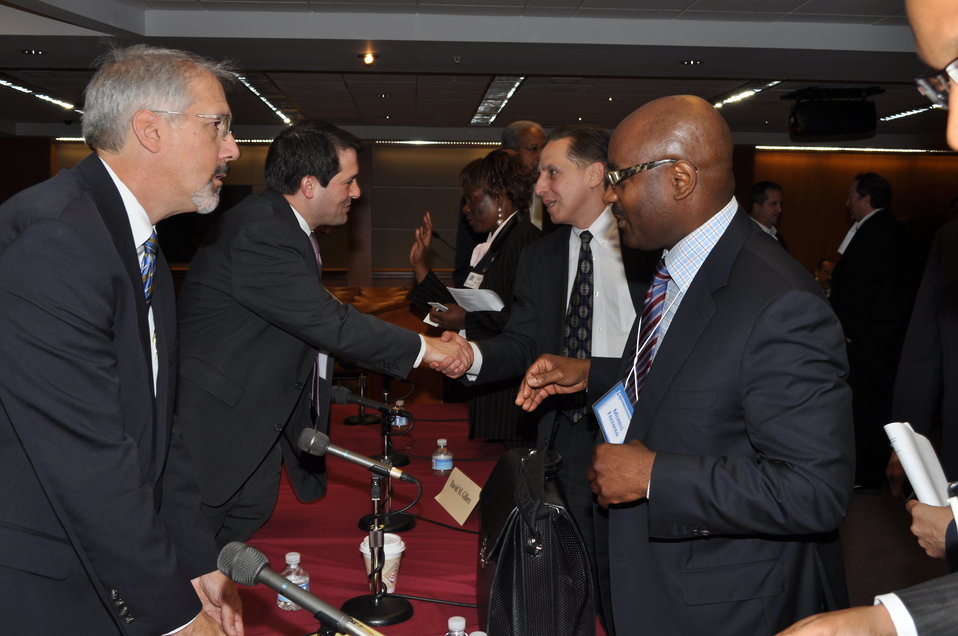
Capitalization Strategies

Workshop for small, minority and women owned businesses. Hosted by the Office of Communications Business Opportunities